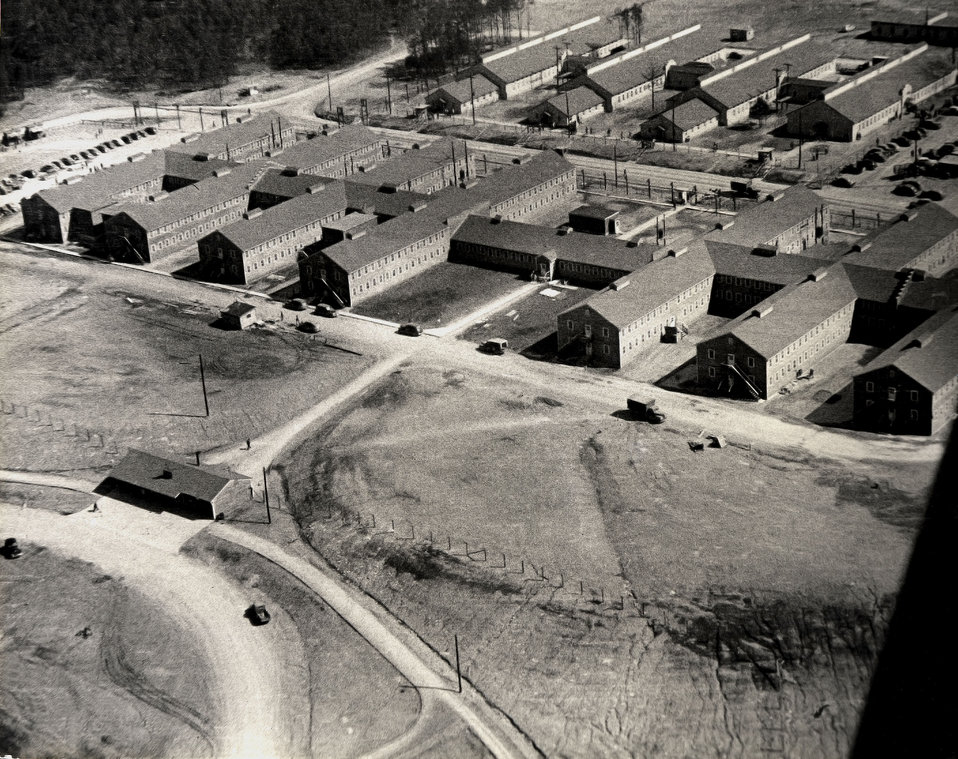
AEC Admin. Bldg. Oak Ridge

208-22 DOE Photo by Ed Westcott